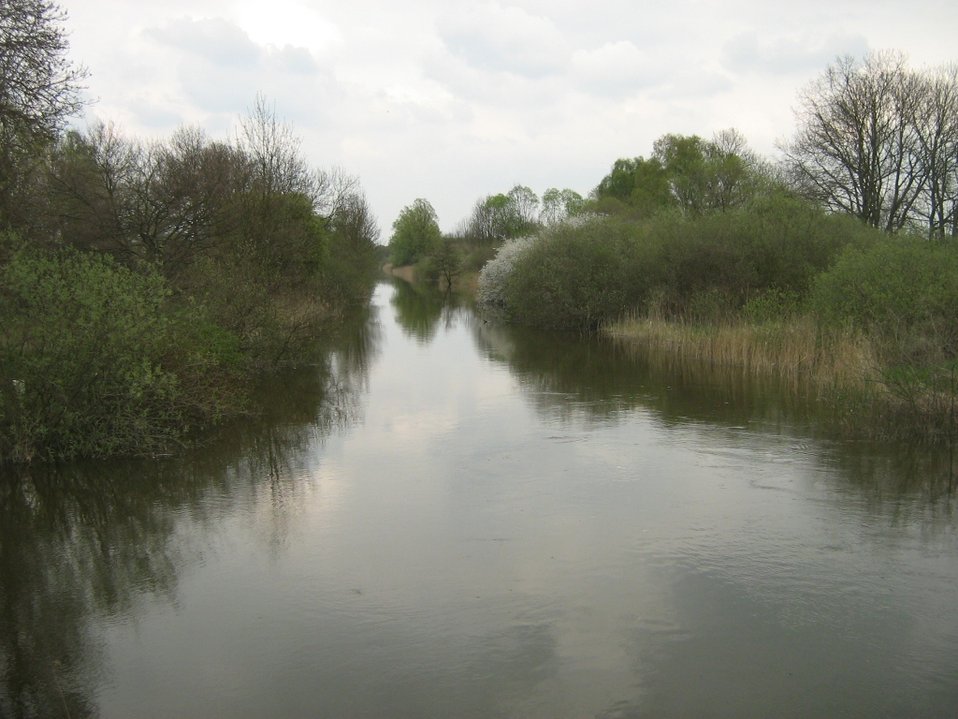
Deutsch: Der Dahmer Kanal entwässert den Malchiner See zur Ostpeene bei Malchin. Er fließt in einem breiten Stromtal zwischen den Bergen der Mecklenburger Schweiz und ist der kanalisierte Verlauf eines Flusses des Peenesystems (einer der kleinen Zuflüsse des Malchiner Sees heißt „Westpeene“). Der Dahmer Kanal ist für Boote schiffbar.